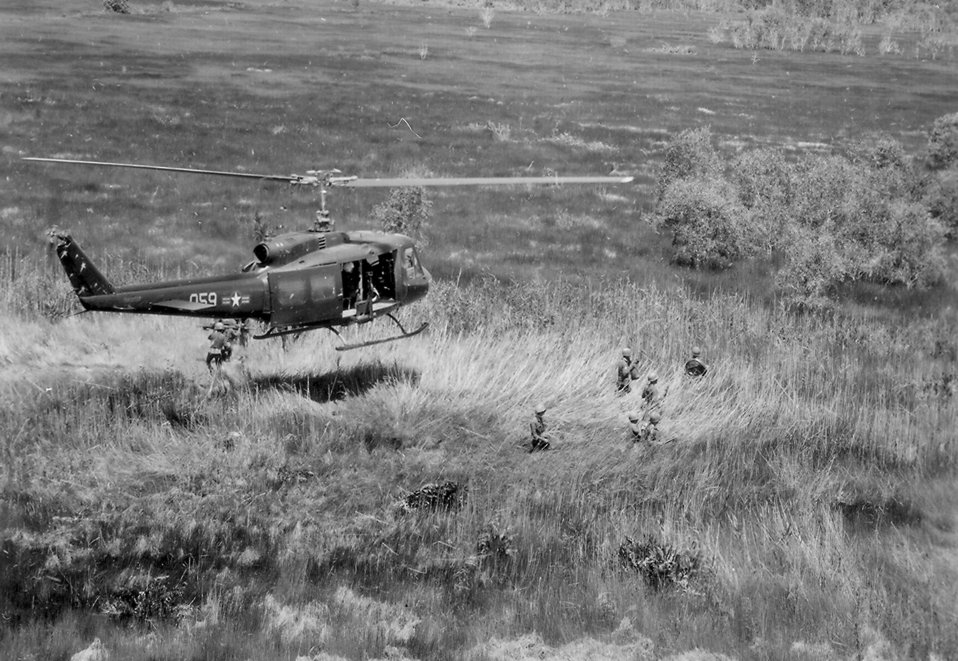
1970's -- Uh-1 helicopter hovers above Vietnamese Air Force personnel of the 211th Helicopter Squadron on a combat assault in the Mekong Delta area of Vietnam.